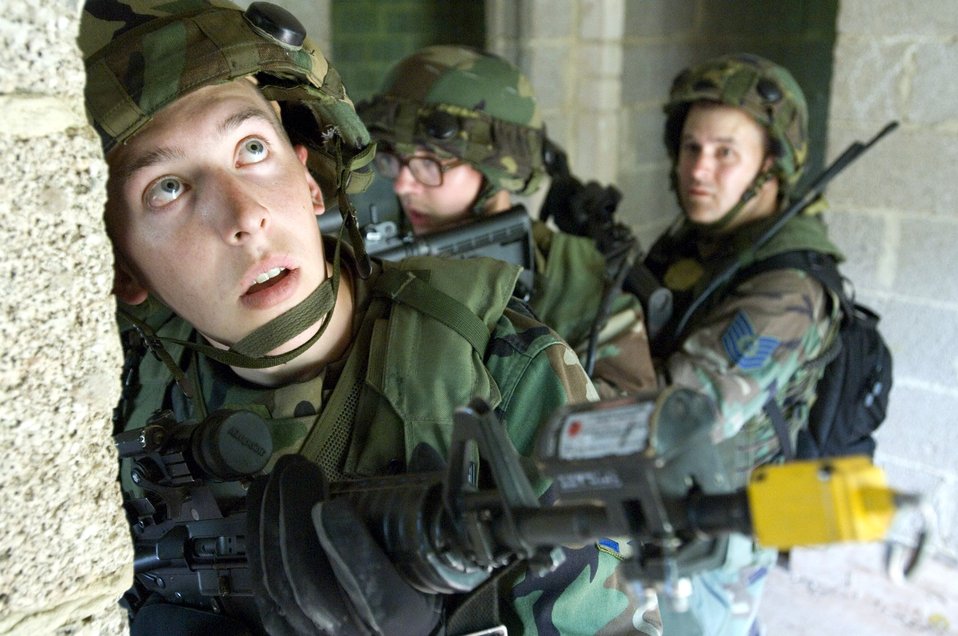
Urban terrain training

Airman 1st Class Luke Jimerson looks for opposing forces during military operations in urban terrain training in Baumholder, Germany, on Sunday, May 14, 2006. Training is conducted by Airmen of the 786th Security Force Squadron at Sembach Air Base, Germany. Airman Jimerson is with the 31st Security Forces Squadron at Aviano Air Base, Italy.